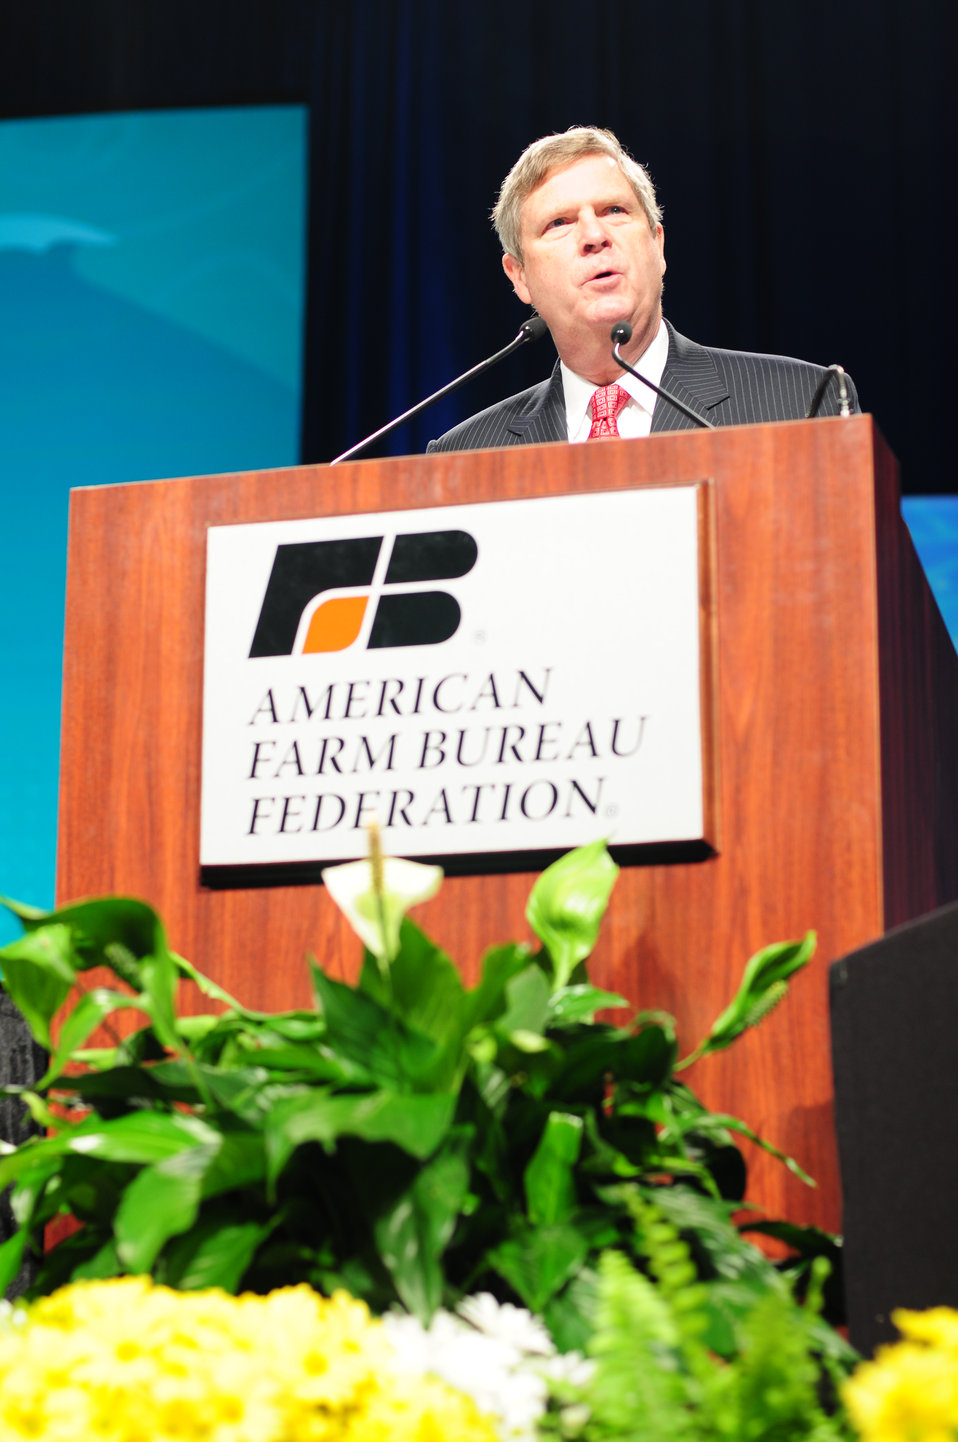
Agriculture Secretary Tom Vilsack speaks at the American Farm Bureau Annual Meeting Closing Ceremony at the Convention Center in Waikiki, Hawaii, on Sunday, January 9, 2012.